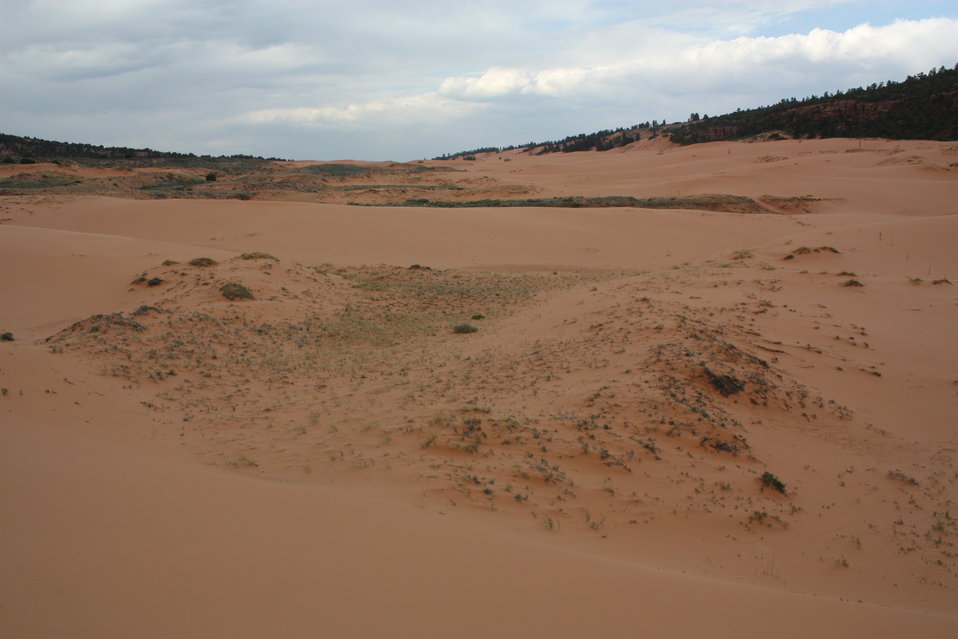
CPSDTB Habitat

The Coral Pink Sand Dune Tiger Beetle occurs within Kane County, Utah.